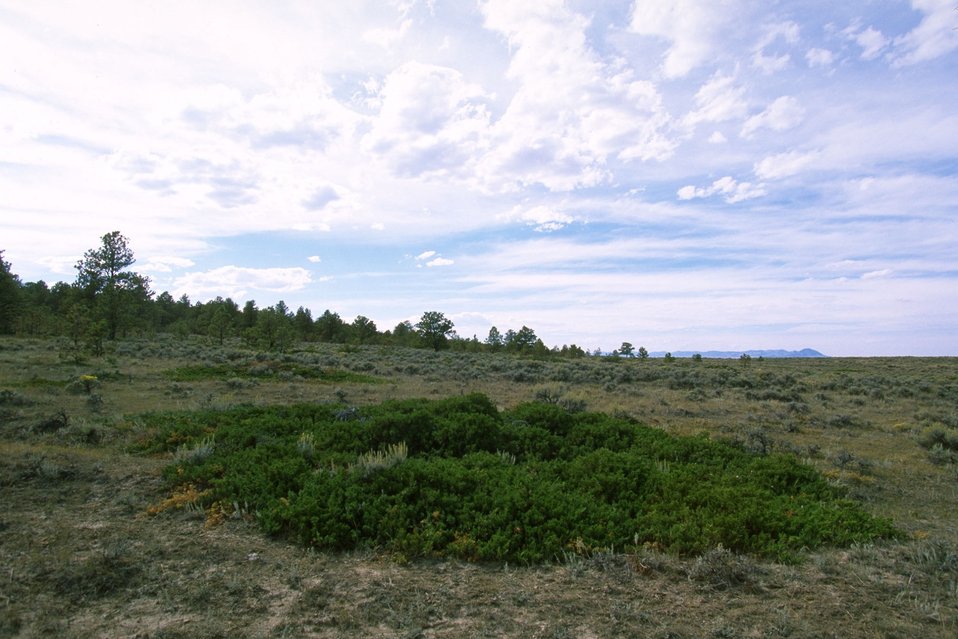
Acid Shale Area of Critical Environmental Concern (ACEC)